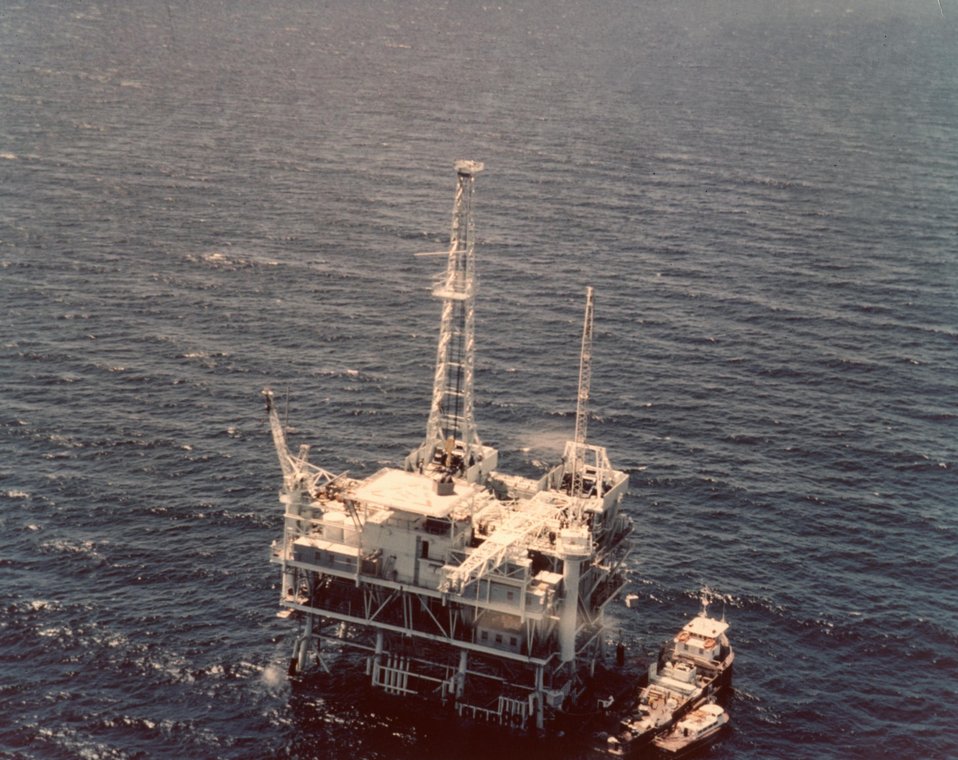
Offshore drilling, Santa Barbara Channel. c. undated